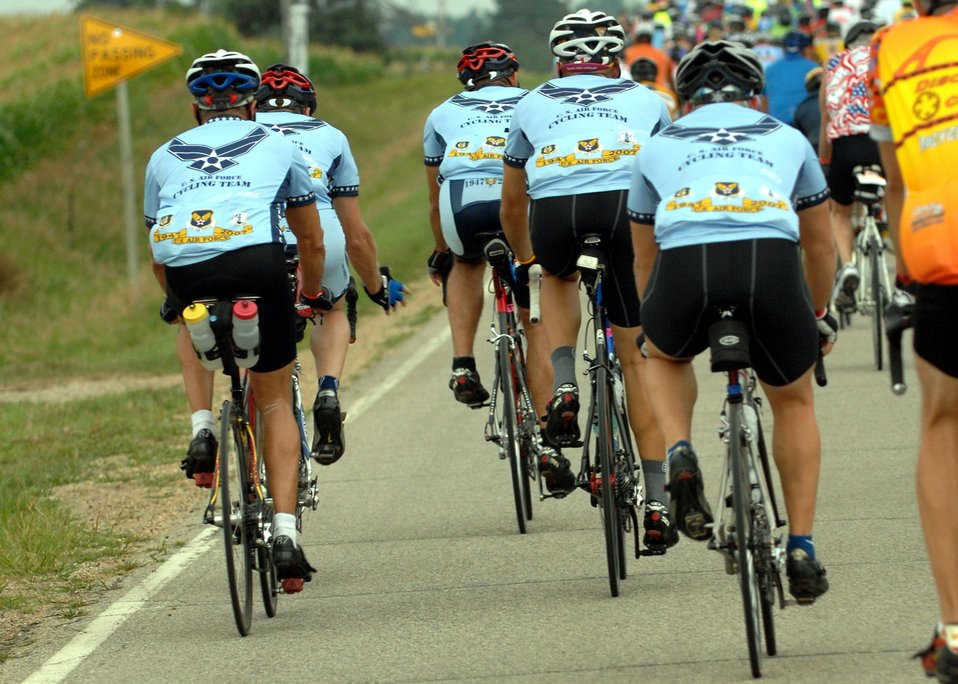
Airmen cycle across Iowa

Some of the 148 members of the U.S. Air Force Cycling Team ride across the Iowa countryside from Spencer to Humboldt July 23 during the third day of the Register's Annual Great Bike Ride Across Iowa, known as RAGBRAI, a cycling event sponsored by the Des Moines Register newspaper. This is the 13th year the Air Force Cycling Team has participated in the RAGBRAI to support Air Force recruiting.